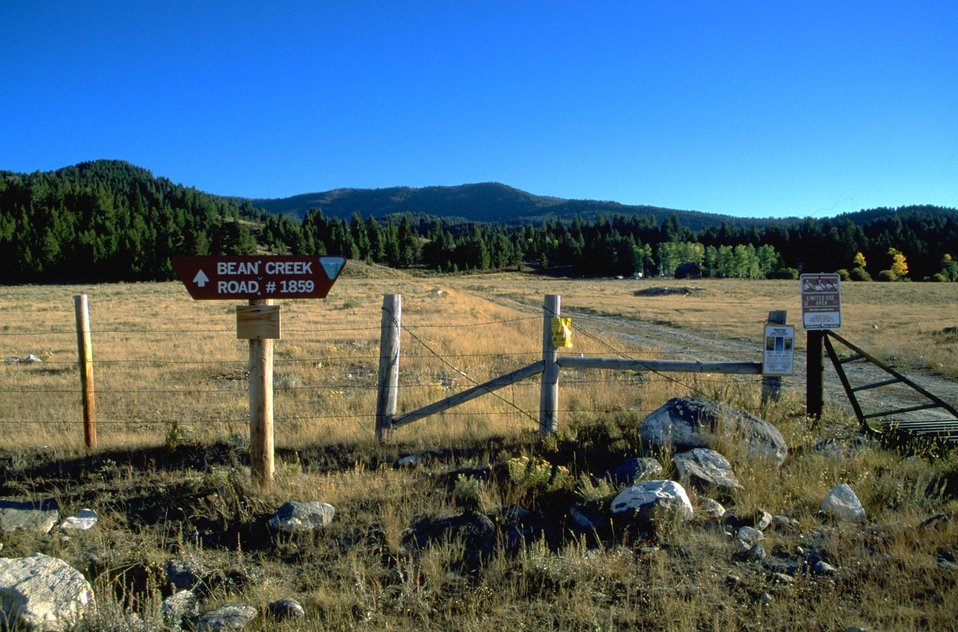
Bean Creek Road sign